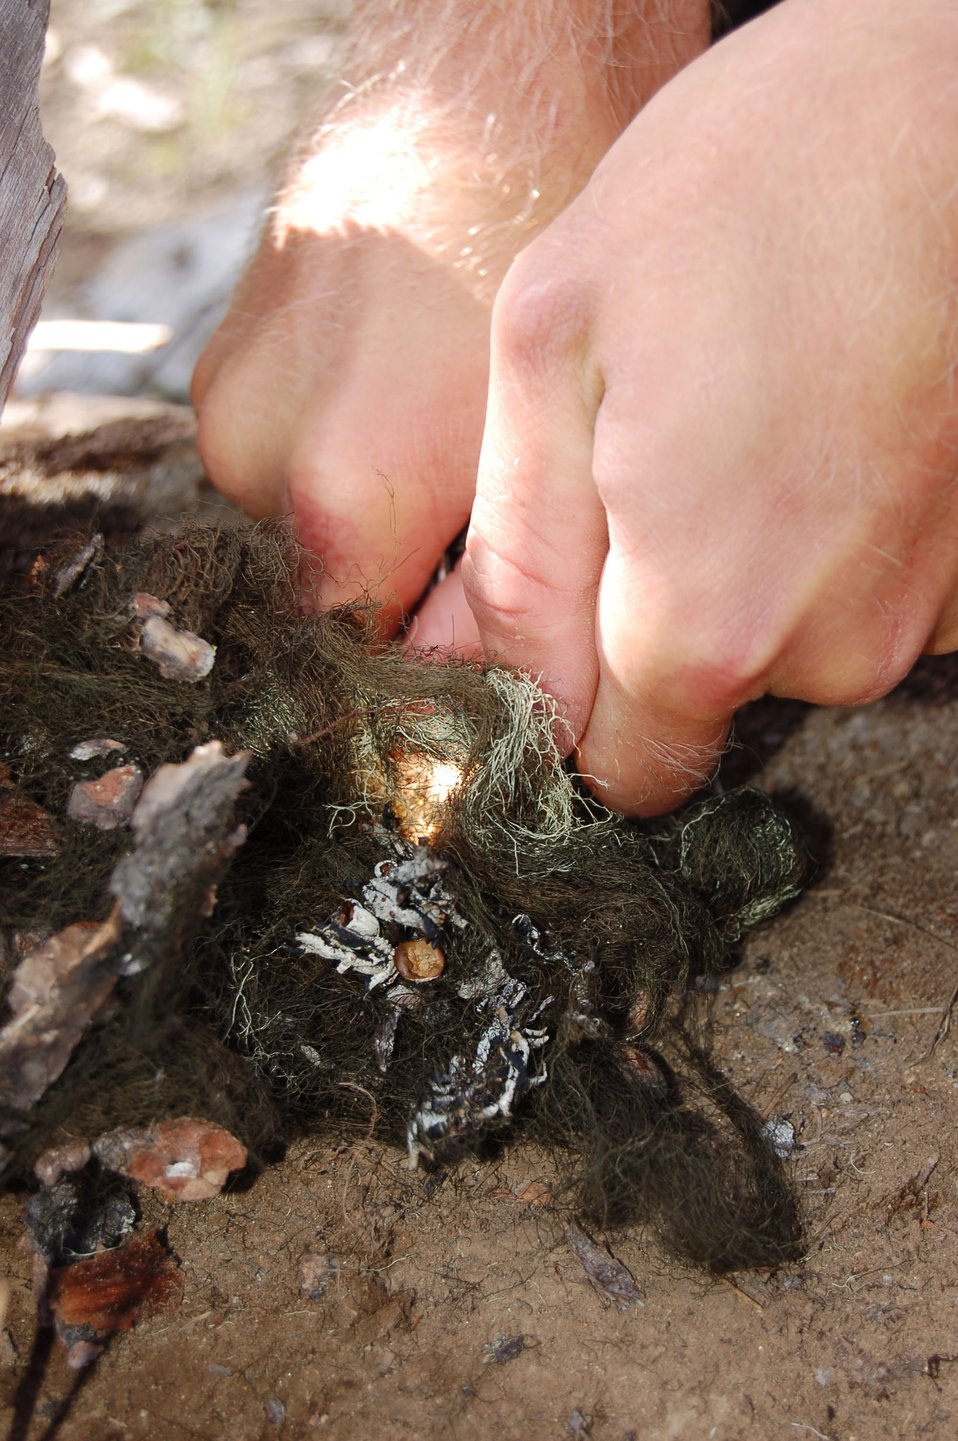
Air Force 'Guardian Angels' put to test at survival competition

A tiny spark catches in the center of a pile of tinder for Staff Sgt. Steven Raethel June 11 during the 2007 SERE (survival, evasion, resistance and escape) Challenge. The competition is intended to foster camaraderie while testing essential survival and combat skills, the competition featured 15 two-man teams representing the Air Force's Guardian Angel weapons system. Guardian Angel is comprised of survival, evasion, resistance, escape specialists; pararescuemen; and combat rescue officers.